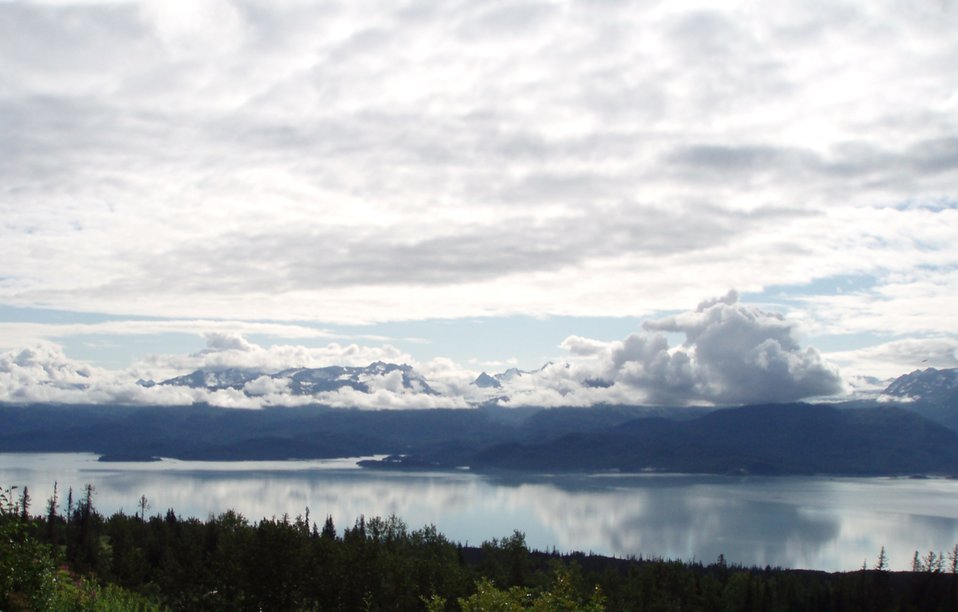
Cloud and mountain reflections at Kachemak Bay.